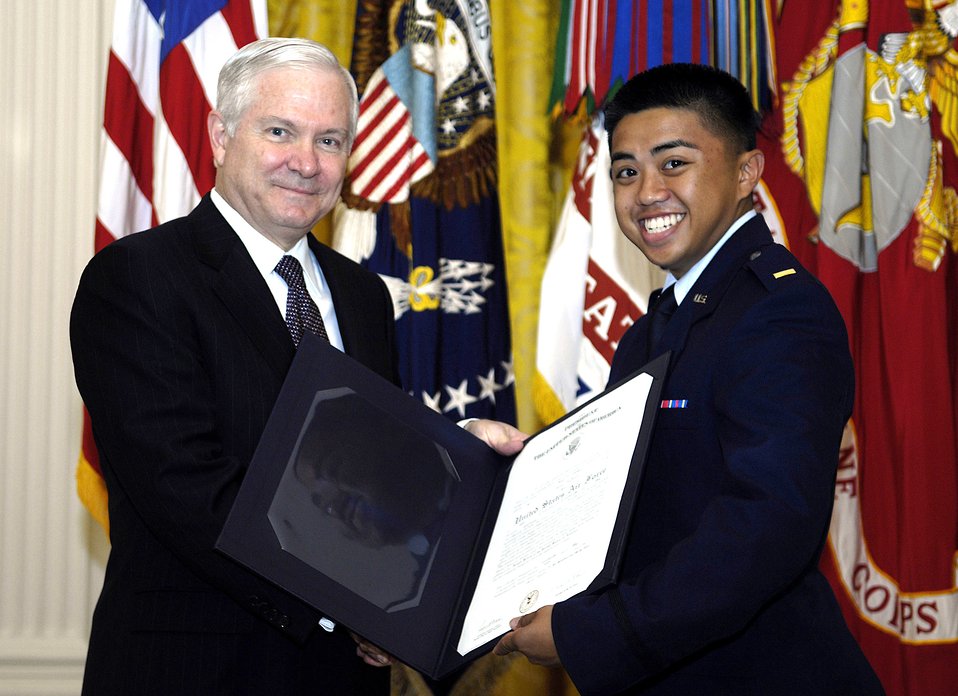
SECDEF administers 1st commissioning oath to ROTC cadets

Defense Secretary Robert M. Gates is pictured with a newly commissioned 2nd Lt. James Abellana during the first joint-ROTC commissioning ceremony May 17 at the White House, in Washington, D.C. Lieutenant Abellana attended the University of Hawaii. He will enter the acquisition career field and be assigned to Los Angeles Air Force Base, Calif.